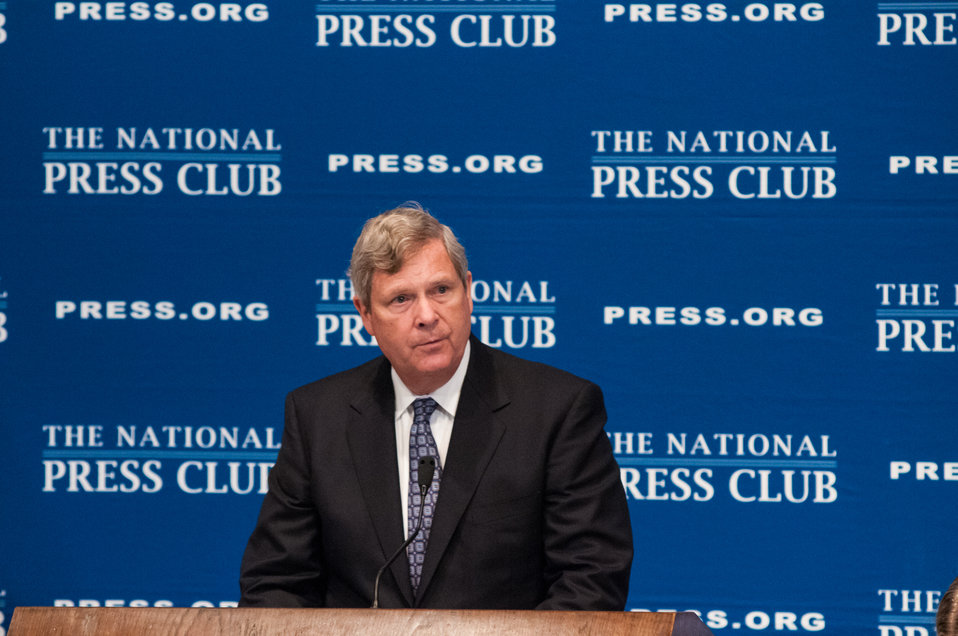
Agriculture Secretary Tom Vilsack discusses the vision for the U.S. Department of Agriculture’s (USDA) future efforts to assist America to adapt to modern environmental challenges at the National Press Club in Washington, D.C. on Wednesday Jun. 5, 2013.